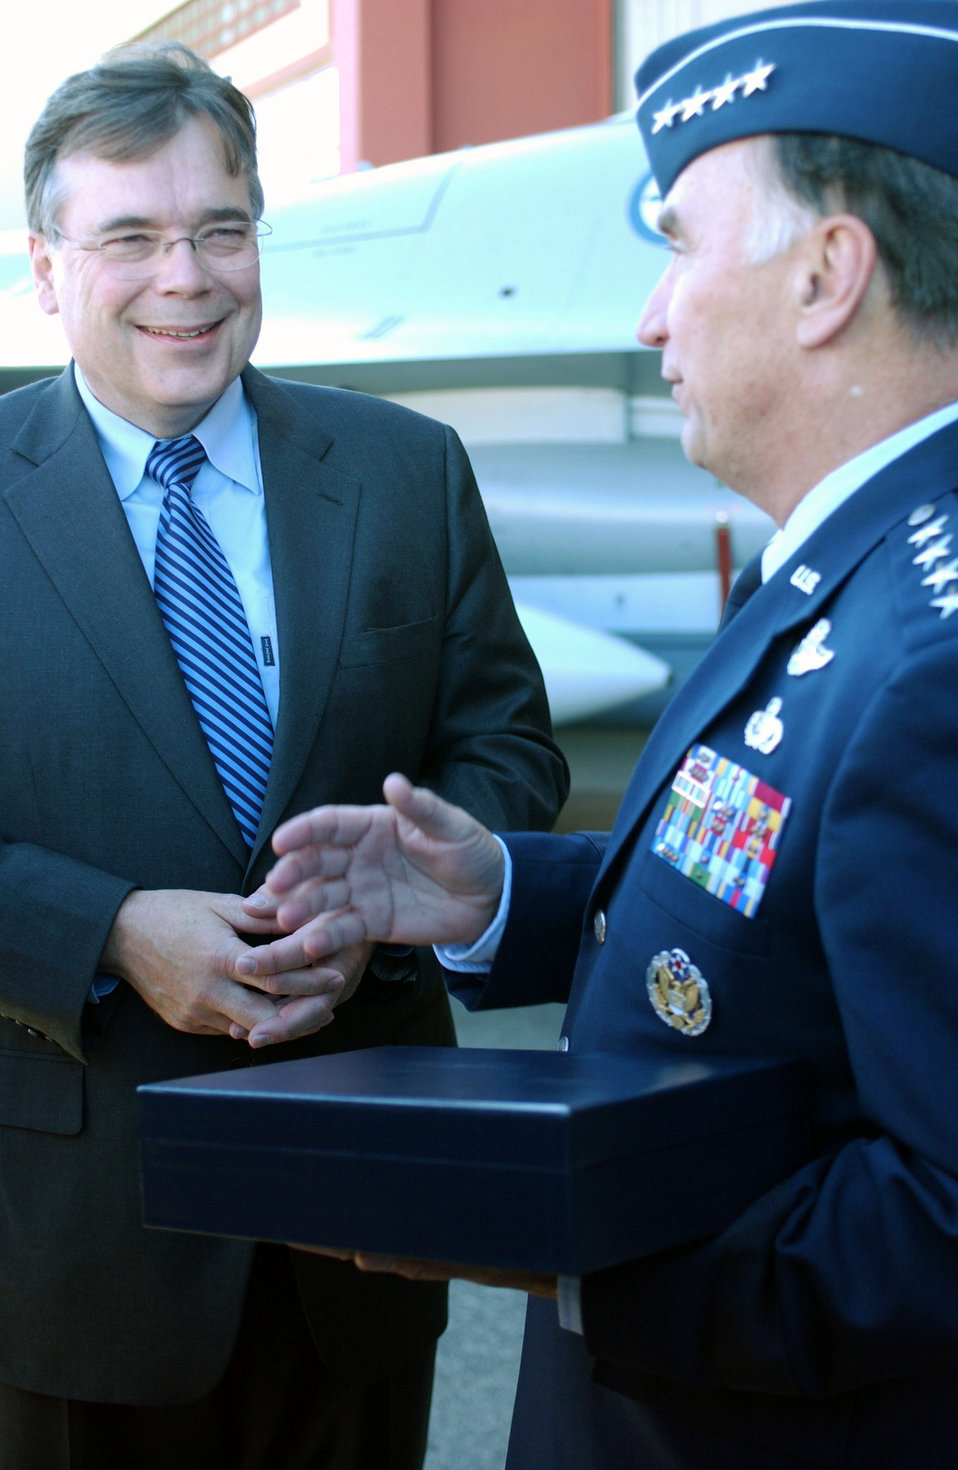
Icelandic defense exercise kicks off

Gen. William T. Hobbins meets with Iceland Prime Minister Geir H. Haarde Aug. 13 during the opening ceremonies of exercise Northern Viking 2007. The exercise is designed to demonstrate U.S. commitment to the 1951 bilateral U.S.-Iceland defense agreement and reinvigorate air defense command and control capabilities of joint and coalition forces in Iceland. General Hobbins is commander of U.S. Air Forces in Europe.